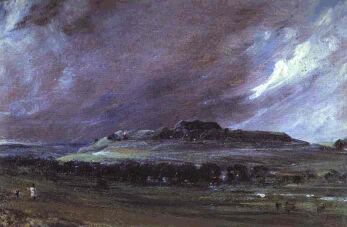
Old Sarum by John Constable, 1829.